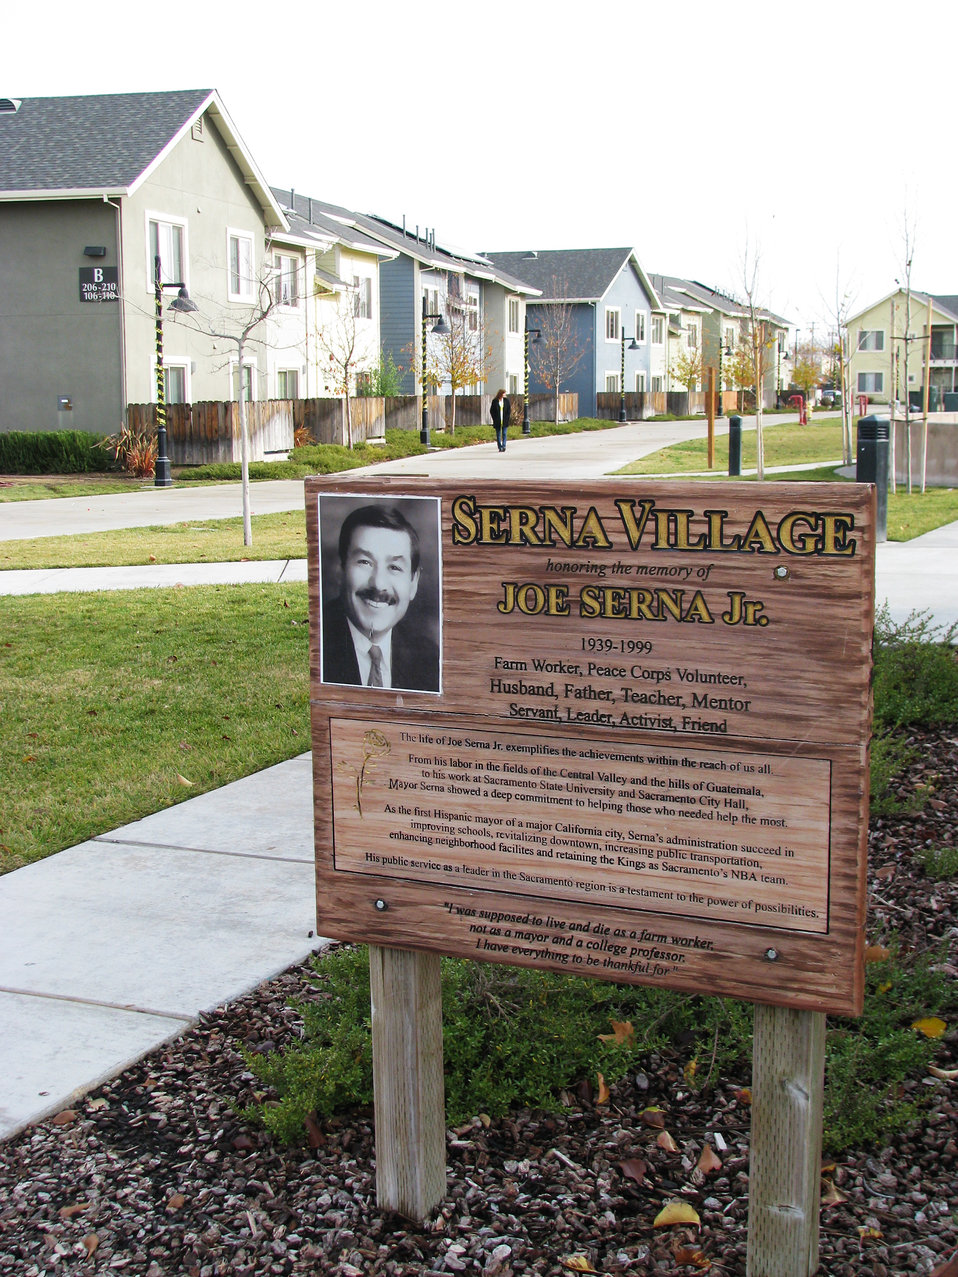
Former McClellan Air Force Base now model community for helping the homeless

In what used to be a vacant lot across from the “base gym” on the former McClellan Air Force Base, Calif., is now a model community for helping the homeless. This village of 83 newly-built apartments is a safe haven for 100 recently homeless parents and more than 200 of their children.